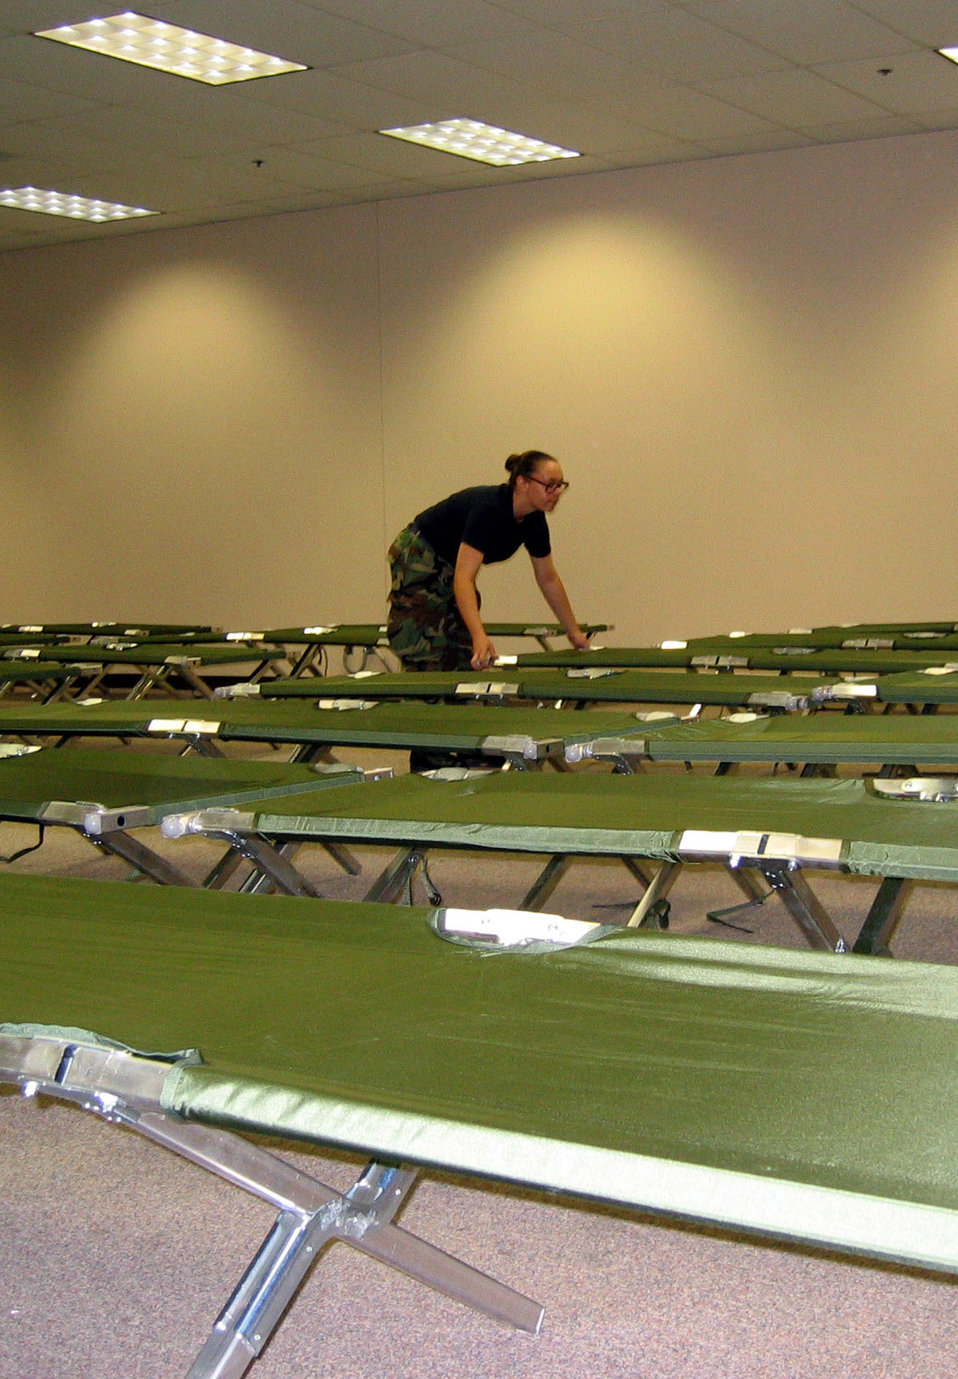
Lackland Airmen turn office areas into living spaces

SAN ANTONIO -- Airman Diane Burton aligns cots at a center to house people displaced by Hurricane Katrina. In all, 200 Airmen from nearby Lackland Air Force Base helped tear down modular office furniture in a 350,000 square foot building and set up the cots. Airman Burton is assigned to the 323rd Training Squadron.